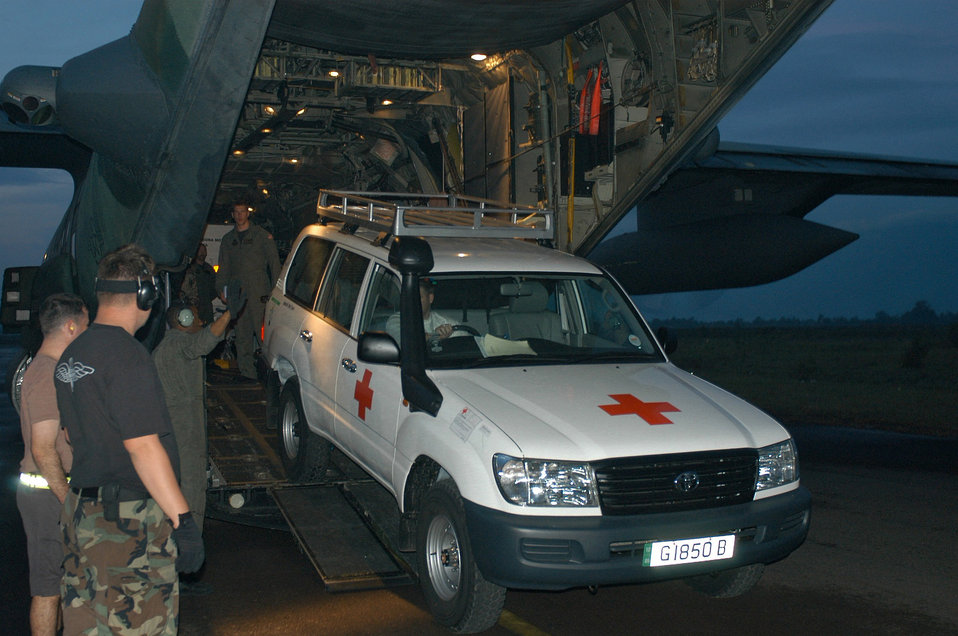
Airmen put relief on target

BANDA ACEH, Indonesia -- A Spanish Red Cross support vehicle is driven off an MC-130H Combat Talon II here. Hundreds of doctors, nurses, nongovernmental disaster aid specialists and related equipment have been flown north from Langkawi, Malaysia. Washed-out roads make overland travel nearly impossible.